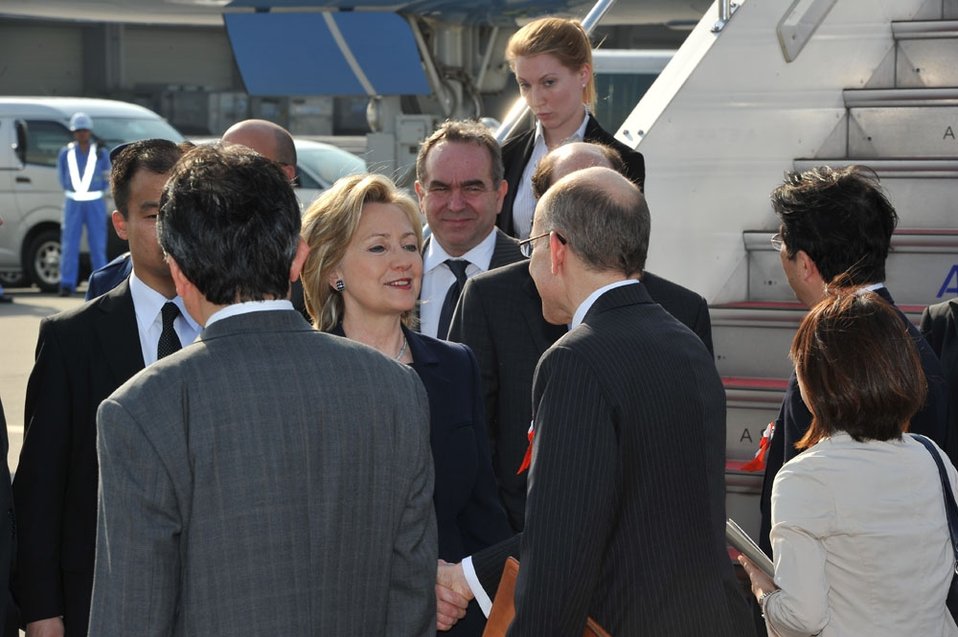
Secretary Clinton Shakes Hands With Tokyo Embassy Deputy Chief of Mission Zumwalt

U.S. Secretary of State Hillary Rodham Clinton shakes hands with Tokyo Embassy Deputy Chief of Mission James P. Zumwalt as U.S. Assistant Secretary of State for East Asian and Pacific Affairs Kurt Campbell looks on, Tokyo, Japan, May 21, 2010.